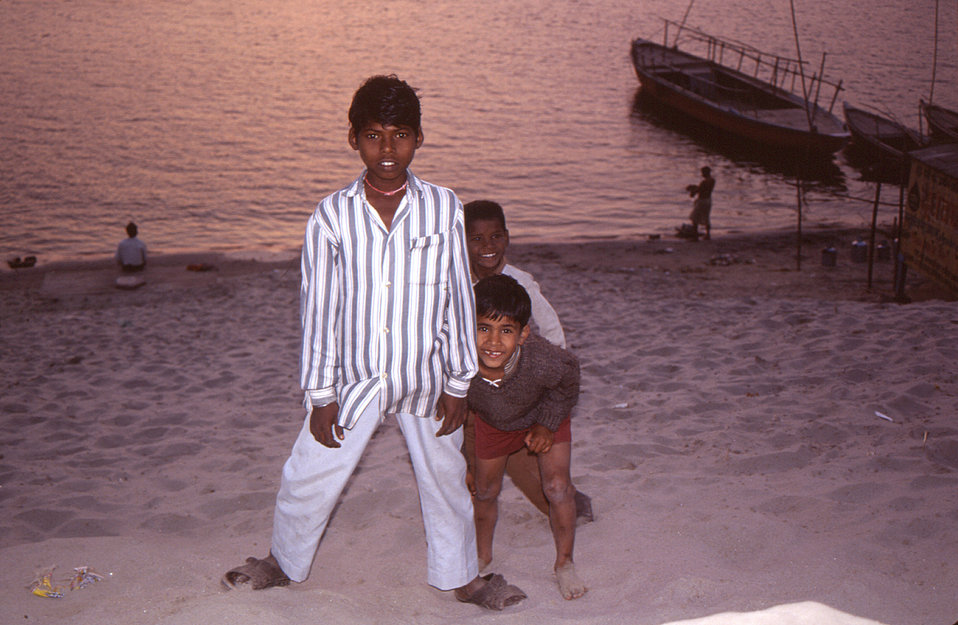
Photographed in 2000 by Chris Zahniser, B.S.N., R.N., M.P.H., a STOP Transmission of Polio (STOP) immunization initiative team member and photographer, these children were seen at play along one of the riverbanks on a body of water located in Uttar Pradesh, India. At the time, Ms. Zahniser was assigned to the state of Uttar Pradesh in northern India, and spent three months working in the Districts of Gorakhpur and Deoria.